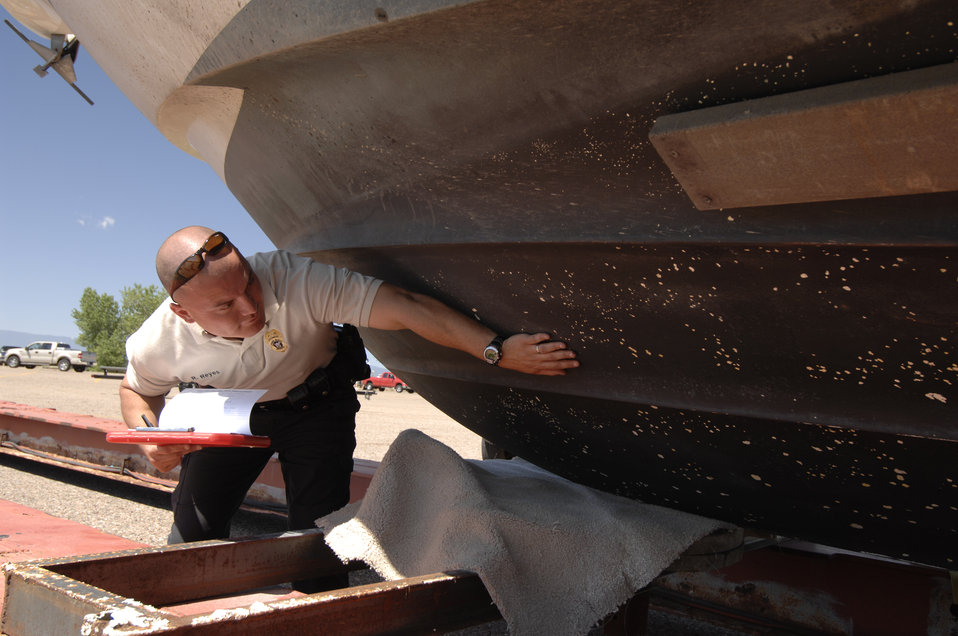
Colorado State Park Officer Reyes inspects the hull of a fishing boat at Pueblo Lake, Colorado on June 12, 2008 for aquatic invasive species. A species is considered invasive it is nonnative to the ecosystem and its introduction causes or is likely to cause economic or environmental harm or harm to human health. The goal of the U.S. Department of Agriculture’s (USDA) Forest Service (FS) invasive species program is to reduce, minimize, or eliminate the potential for introduction, establishment, spread, and impact of invasive species across all landscapes and ownerships.